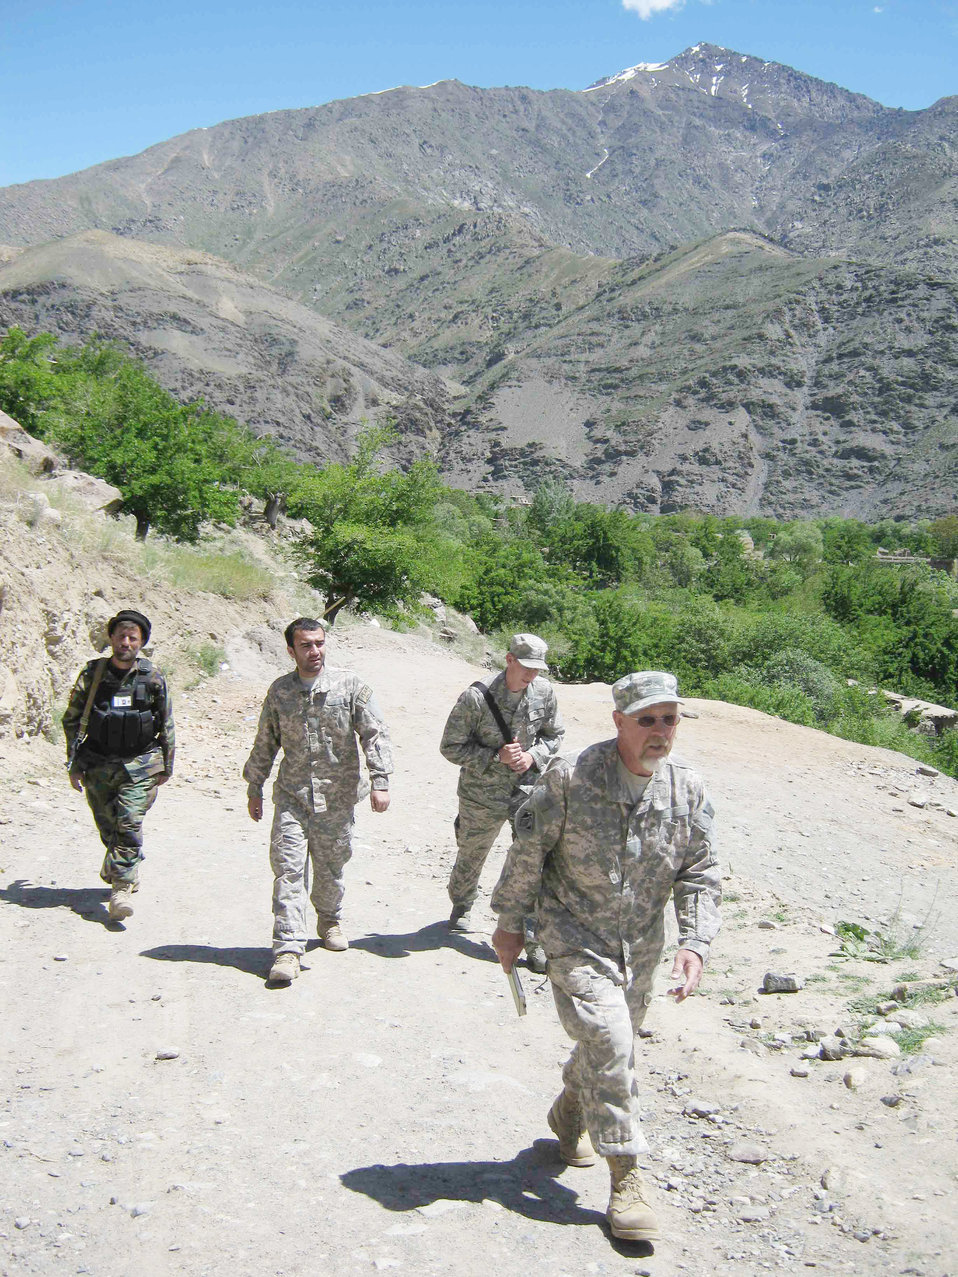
Panjshir Provincial Reconstruction Team

Scott Davis (front) and 2nd Lt. Jason Adams (back, right) walk with an interpreter and local mujahedeen guard at Panjshir Province, Afghanistan. Mr. Davis is a construction representative for the Army Corps of Engineers attached to Provincial Reconstruction Team Panjshir. Lieutenant Adams is a PRT Panjshir civil engineer.